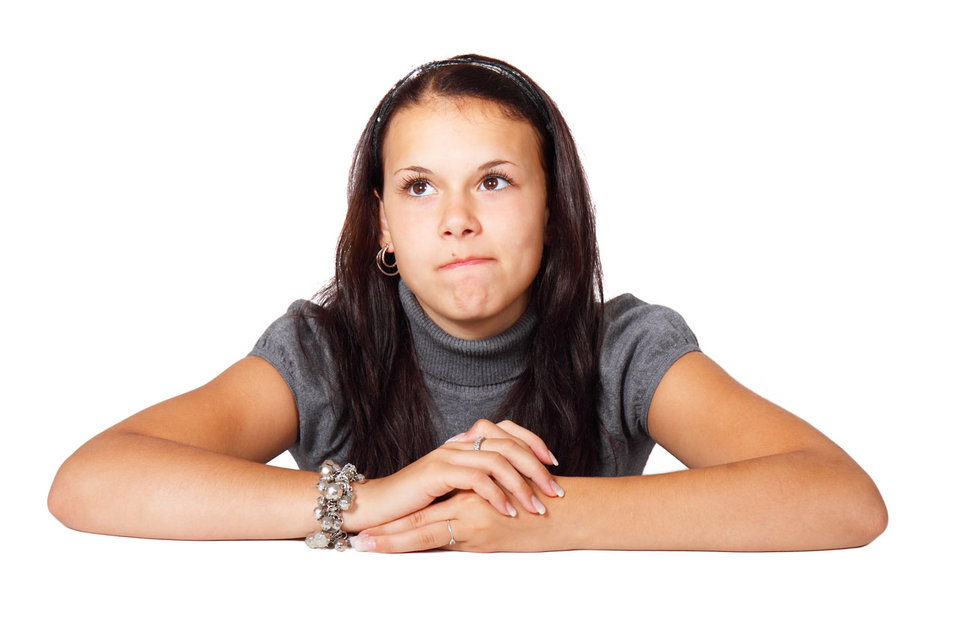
Young woman thinking isolated on white background.